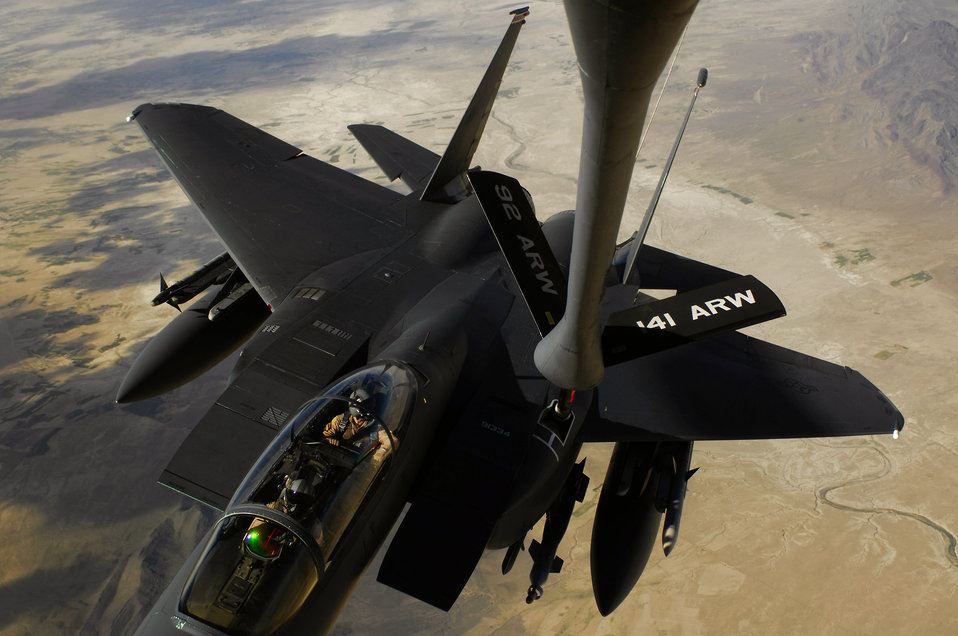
Jan. 24 airpower summary: F-15Es target anti-Afghan forces

An F-15E Strike Eagle aircraft receives fuel from a KC-135R Stratotanker during a mission over Afghanistan. The F-15E provides close-air support and armed aerial overwatch to deter enemy activities.